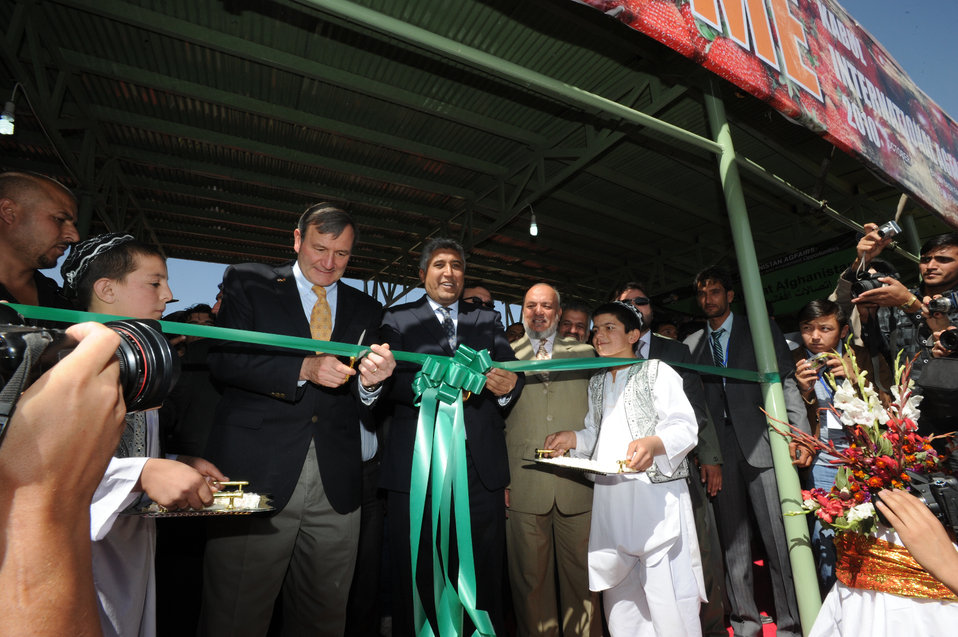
International Agricultural Fair Showcases Afghanistan's Growing Agriculture Sector